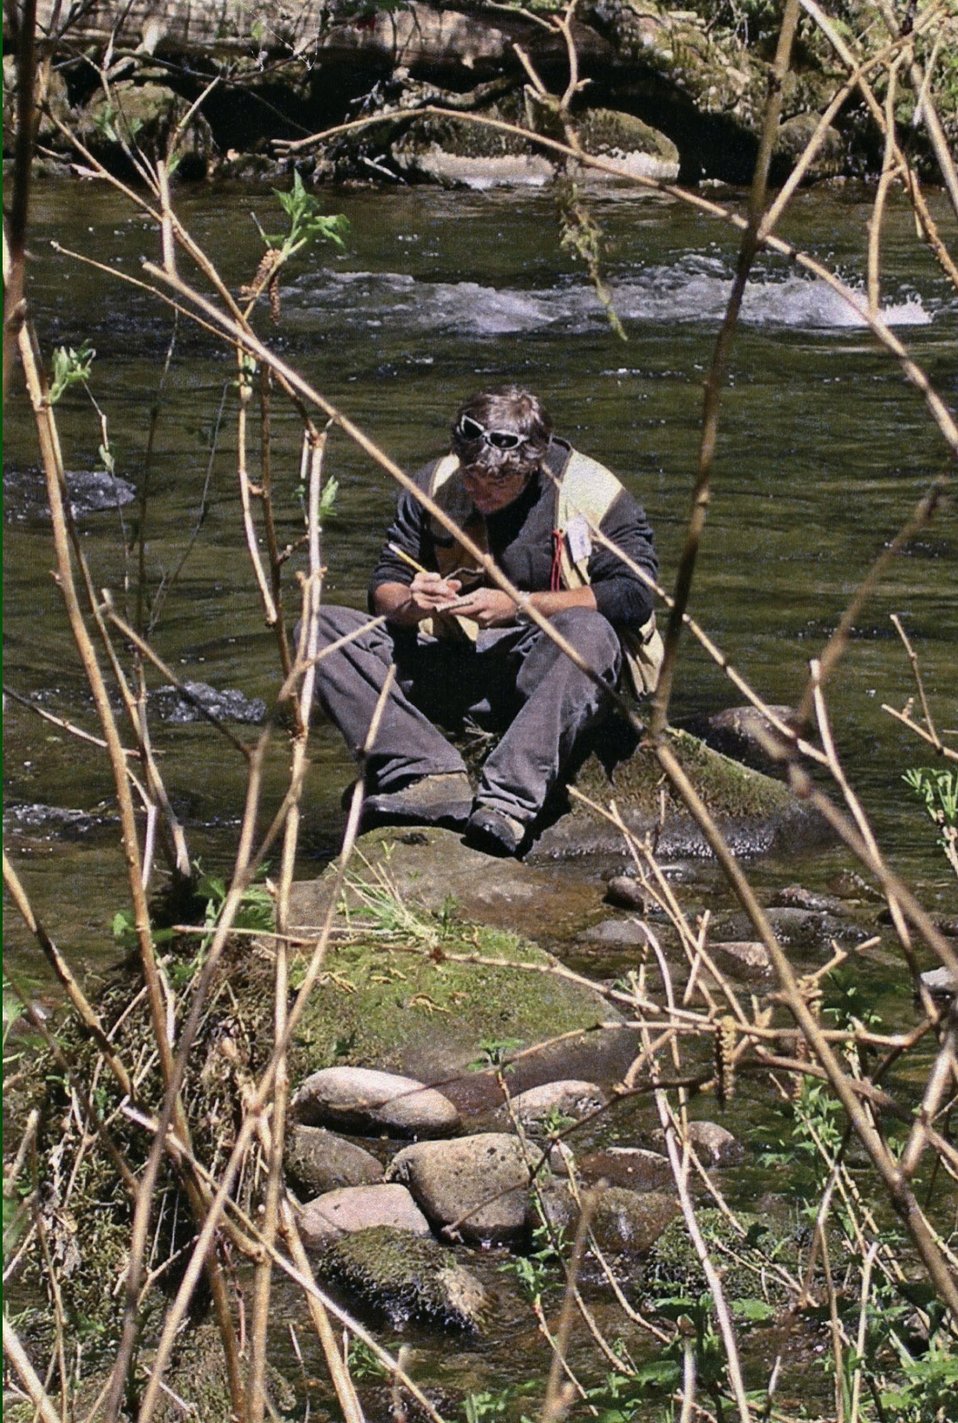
Journal Writing Environmental Education. Salmon River, Wildwood Desi Hummel, State Office People 2